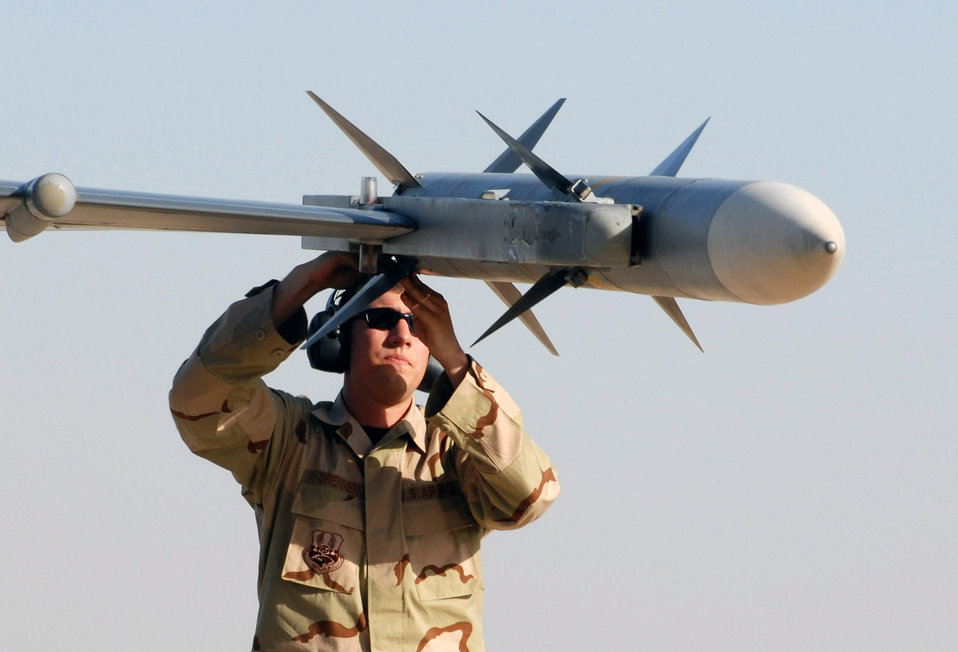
Armed and ready to go

Airman 1st Class Mark Drennen checks an AIM-120 missile on an F-16 Fighting Falcon June 27 at Balad Air Base, Iraq, before a combat mission. Airman Drennen is a weapons loader with the 332nd Expeditionary Aircraft Maintenance Squadron and deployed from Misawa Air Base, Japan.